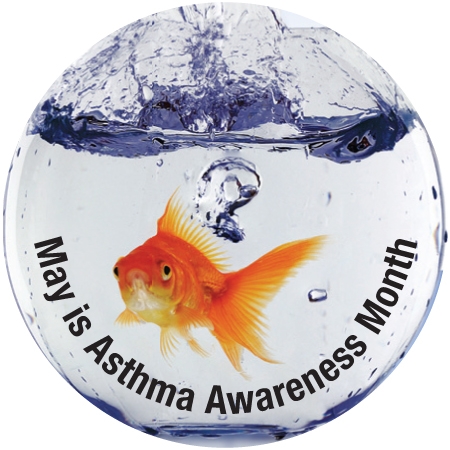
Are You Taking Action for Asthma?

May is Asthma Awareness Month! Our Communities in Action Asthma Initiative, supports local programs working to help people in their communities bring asthma under control. An important part of this Initiative is raising awareness that asthma is a serious, sometimes life-threatening chronic disease that can be controlled.